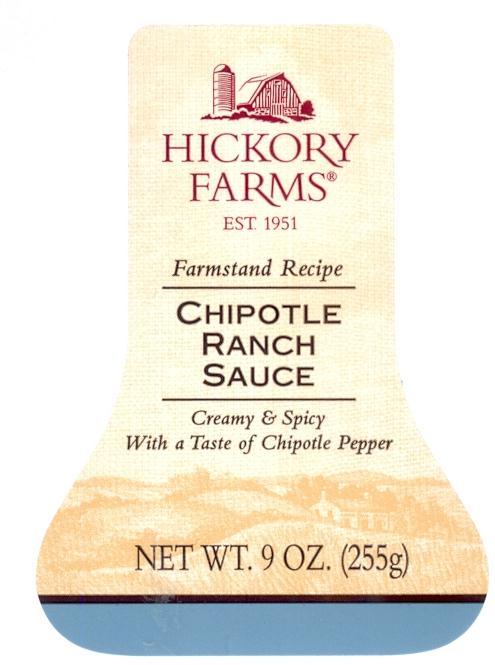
RECALLED – Chipotle Ranch Sauce

April 19, 2014 – Product Recall – Hickory Farms Issues Allergy Alert on Chipotle Ranch Sauce Due to Undeclared Milk.